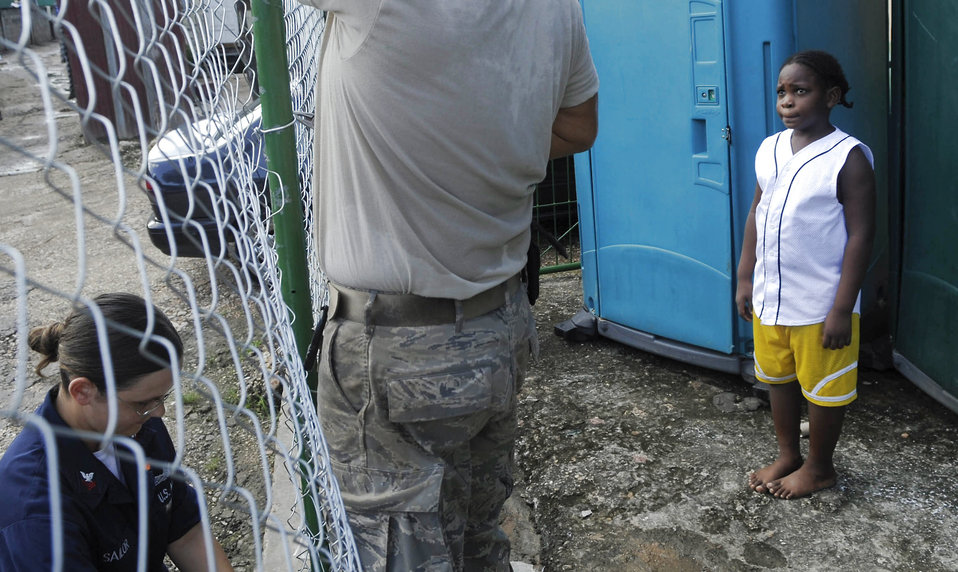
American servicemembers continue to provide promise

A local Trini child watches as an Airman and Sailor put up a fence for the All-in-One Development Center in one of the most dangerous neighborhoods of Trinidad and Tobago Nov. 4.